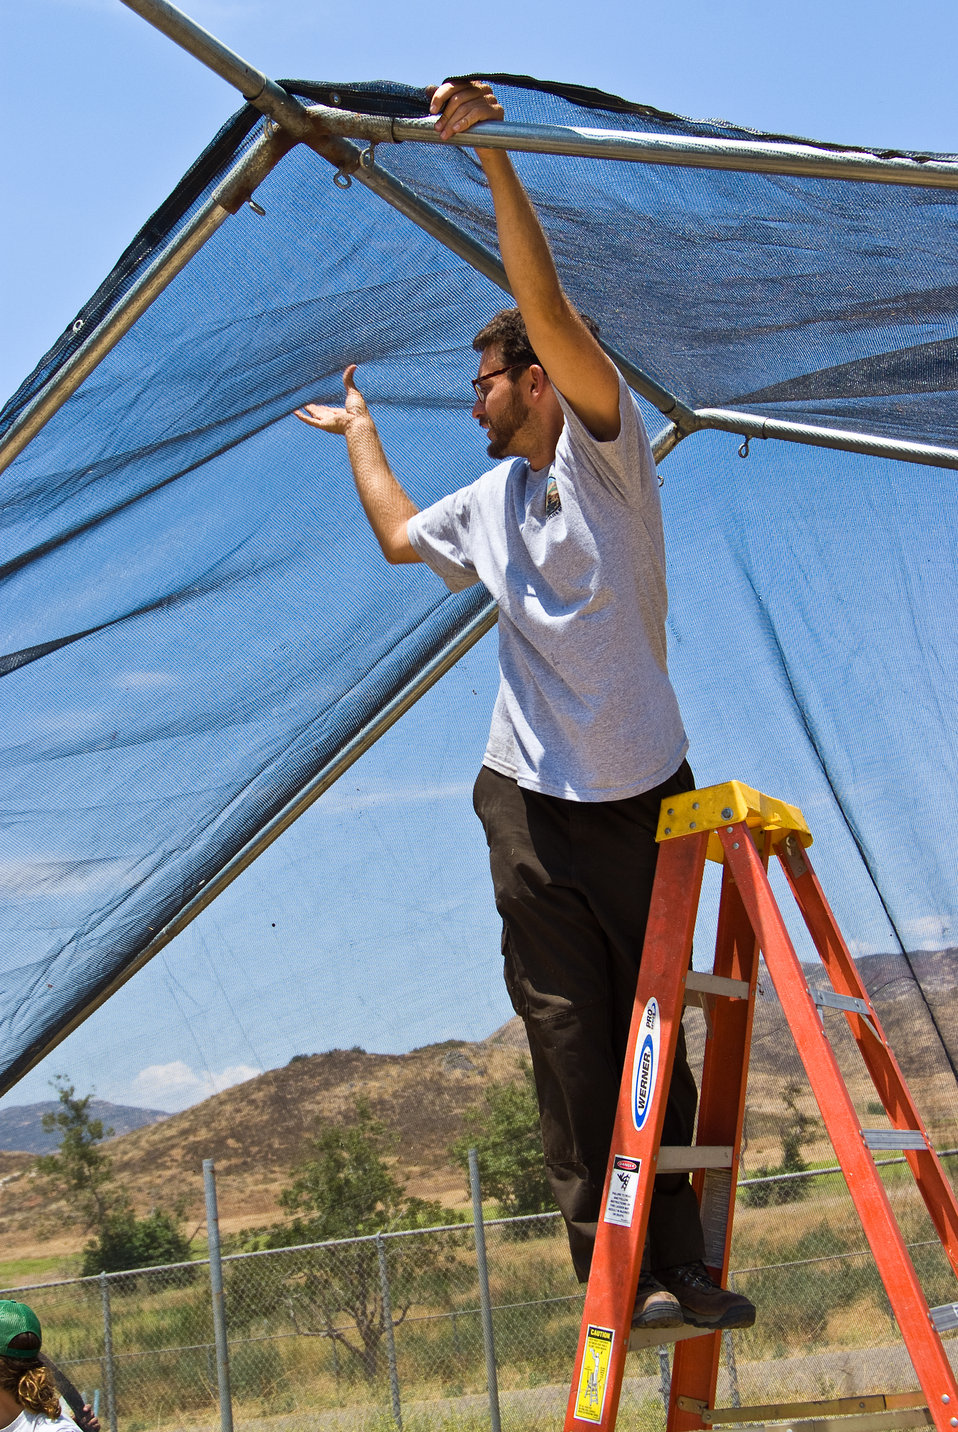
Youth Conservation Corps Leader in San Diego

San Diego NWR Youth Conservation Corp. Leader Adam Taylor